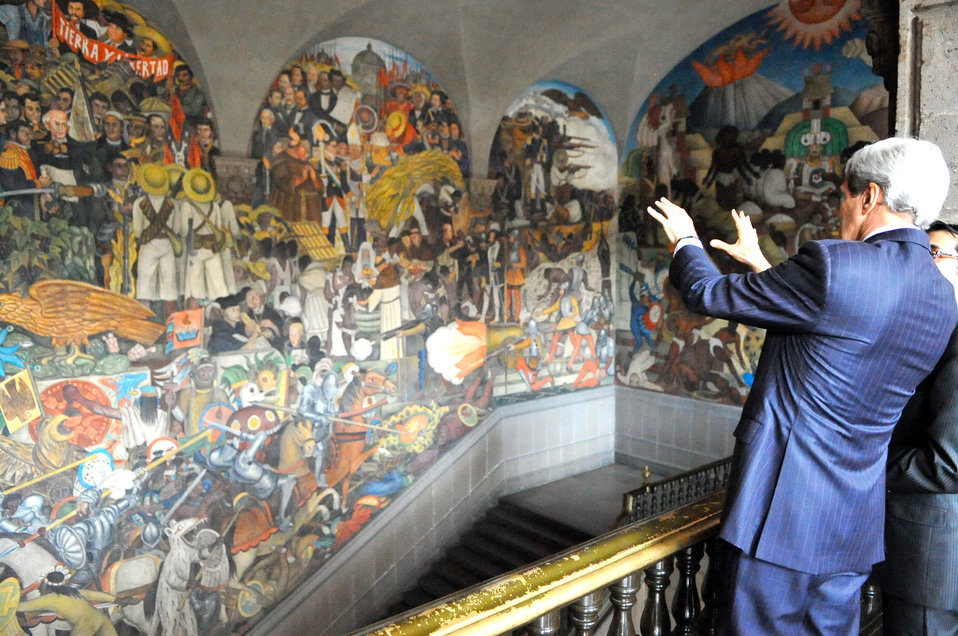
Secretary Kerry Asks About a Diego Rivera Murals in Mexico City

U.S. Secretary of State John Kerry asks guide Rafael Rios Chagolla about a Diego Rivera mural as the Secretary visited the Palacio Nacional in Mexico City, Mexico on May 21, 2014.